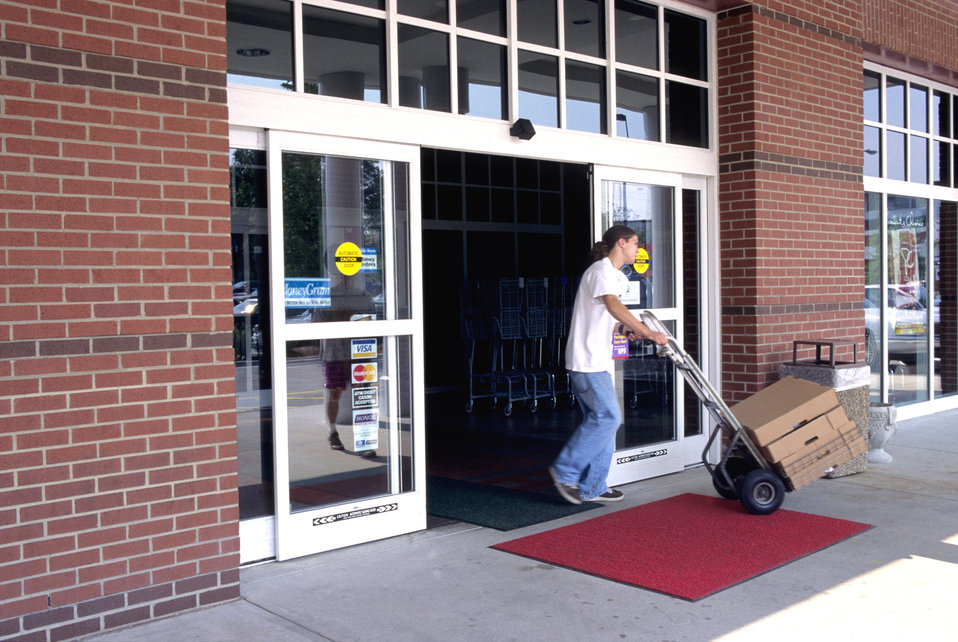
Wheeling a hand truck, this 1996 image depicted a man departing a grocery store transporting a number of boxes to his vehicle. In order to pass out through the doorway safely, both his hands were needed to control the hand truck, therefore, had there have been a door with which to contend, it would have made negotiating the portal more complicated, and more difficult. Widely used, 'no-touch' automatic doors accommodate all types of users, including the mobility-challenged, as well as those whose hands are filled with purchases. Simple, and in common use, the wide automatic door is an excellent example of Universal Design. Other facilities should, where possible, consider this option.